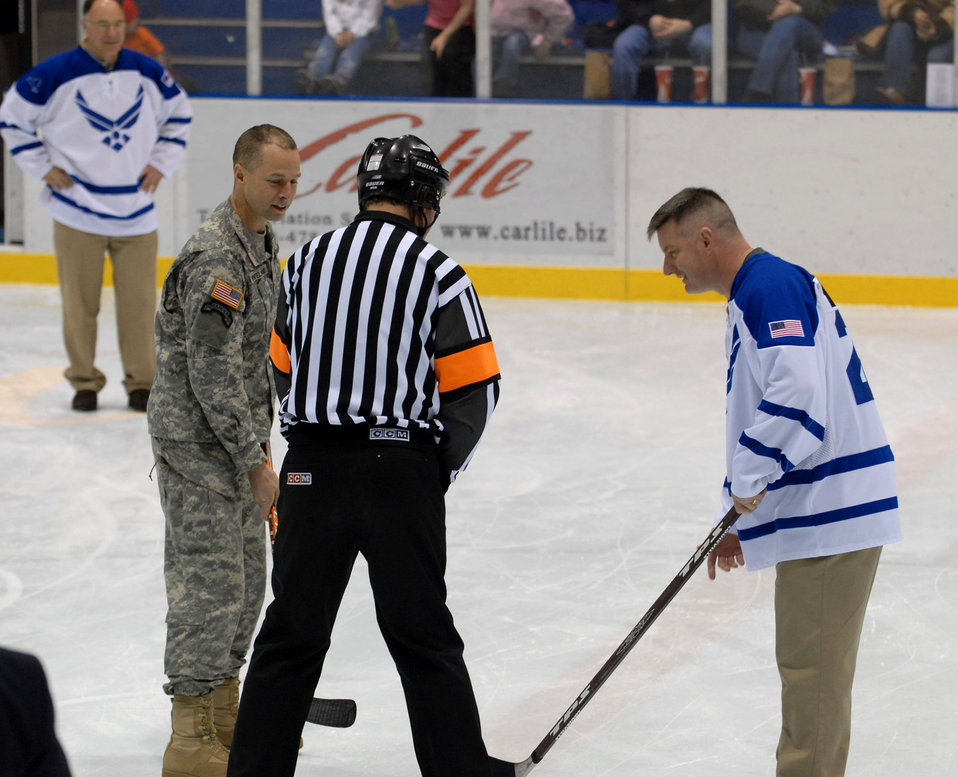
Rumble on the rink

Chief Master Sgt. Stephen Ludwig, representing the Eielson Air Force Base Icemen team, and Command Sgt. Maj. Todd Wentland, representing the Fort Wainwright Grizzlies, face off for the honorary puck drop Jan. 13 at the Big Dipper Ice Arena in Fairbanks, Alaska. Eielson Icemen faced off against Fort Wainwright in the 11th Annual Interior Alaska Armed Forces Ice Hockey Commander's Cup Game. Eielson Icemen went on to win the game 8 to 6. Chief Ludwig is the Eielson Air Force Base command chief.